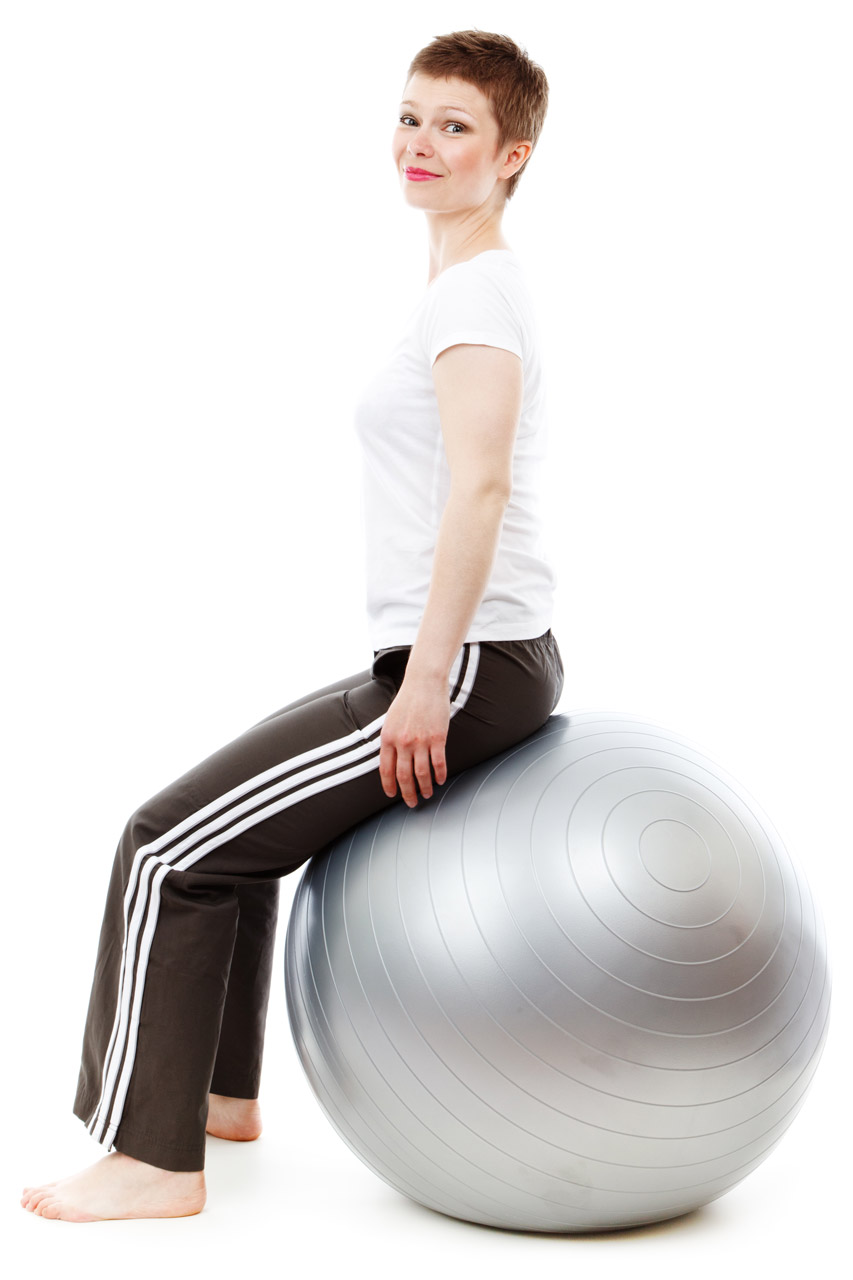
Woman with gym ball

Young woman sitting on a gym ball isolated on white background.